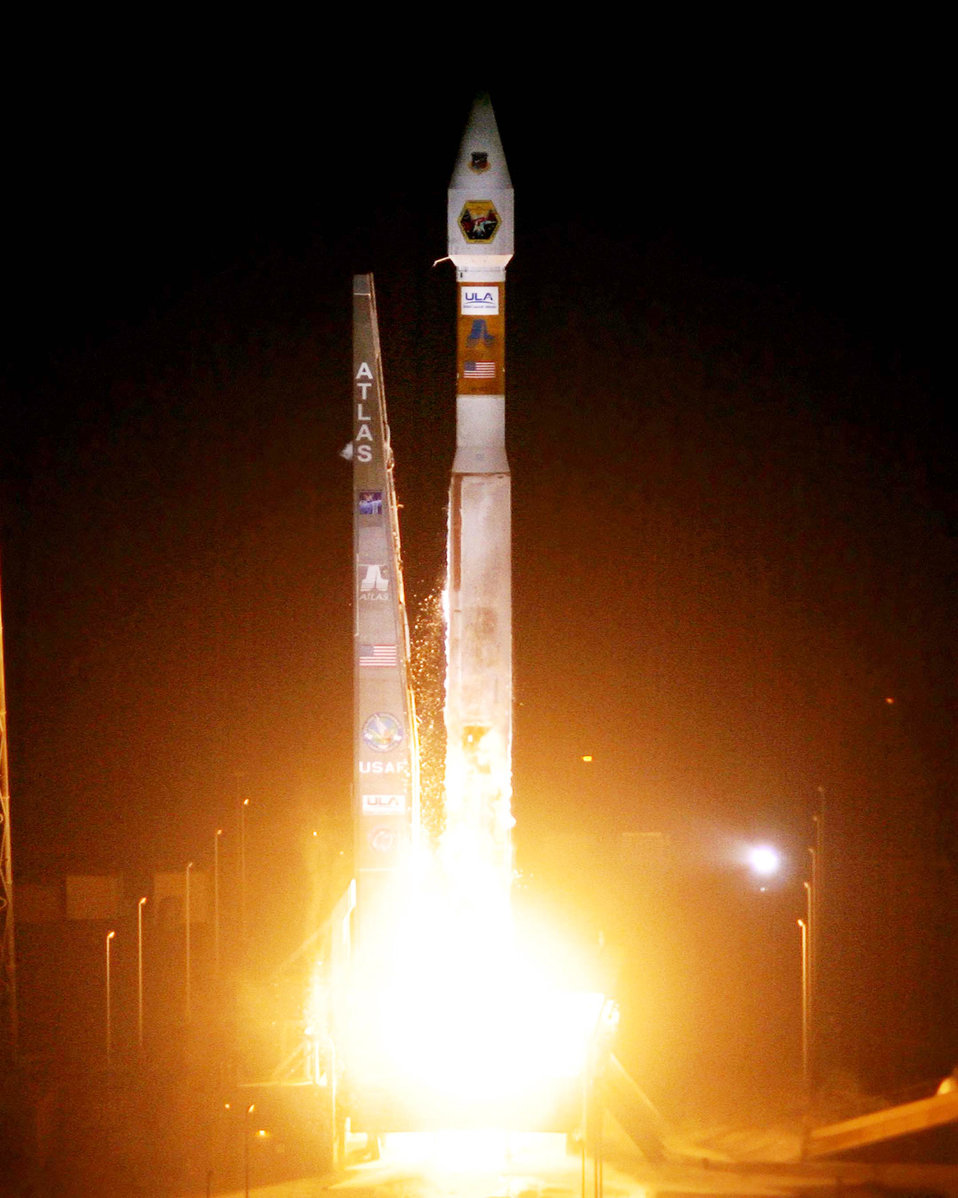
Close encounters of the FalconSAT kind

The U.S. Air Force Academy's FalconSAT-3 and the Department of Energy's experimental Cibola satellite both launched aboard an Atlas V March 8 2007, from Cape Canaveral Air Force Station, Fla. Cibola trained its sensors on FalconSAT-3 Dec. 12 through 13 to help determine the cause of a problem that caused FalconSAT-3's attitude to wobble.